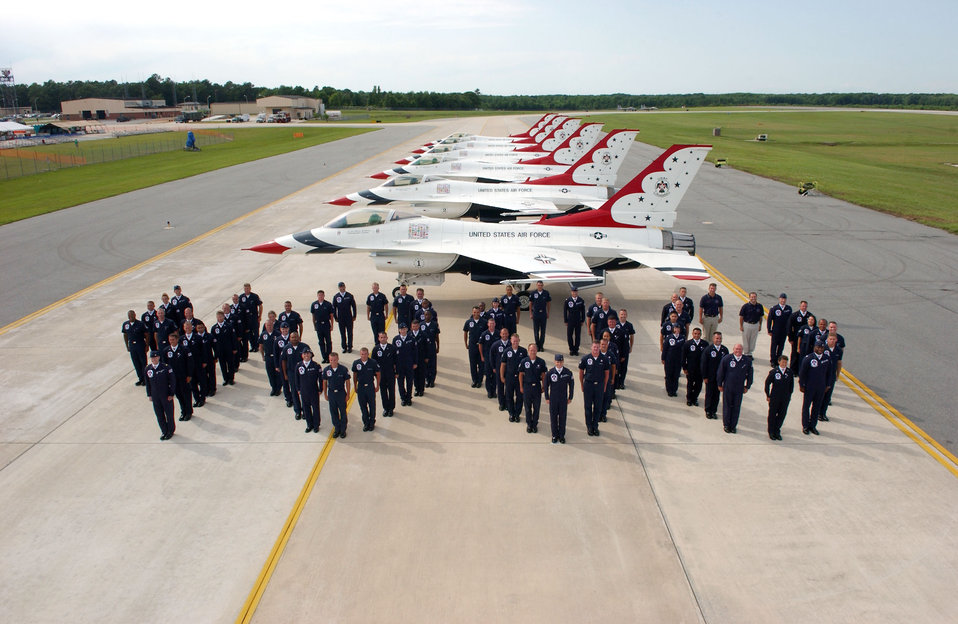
Thunderbirds perform 4,000th show

Airmen from the United States Air Force Air Demonstration Squadron, the Thunderbirds, line up to form the number 4,000 to commemorate the team's milestone air show on Saturday, May 13, 2006.